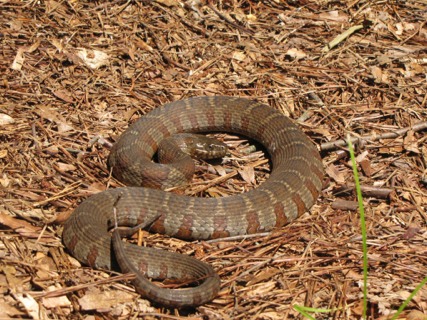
Mattaponi Wildlife Management Area, Virginia

Survey (June 27 - 28, 2012)

Common watersnake (Nerodia sipedon sipedon)